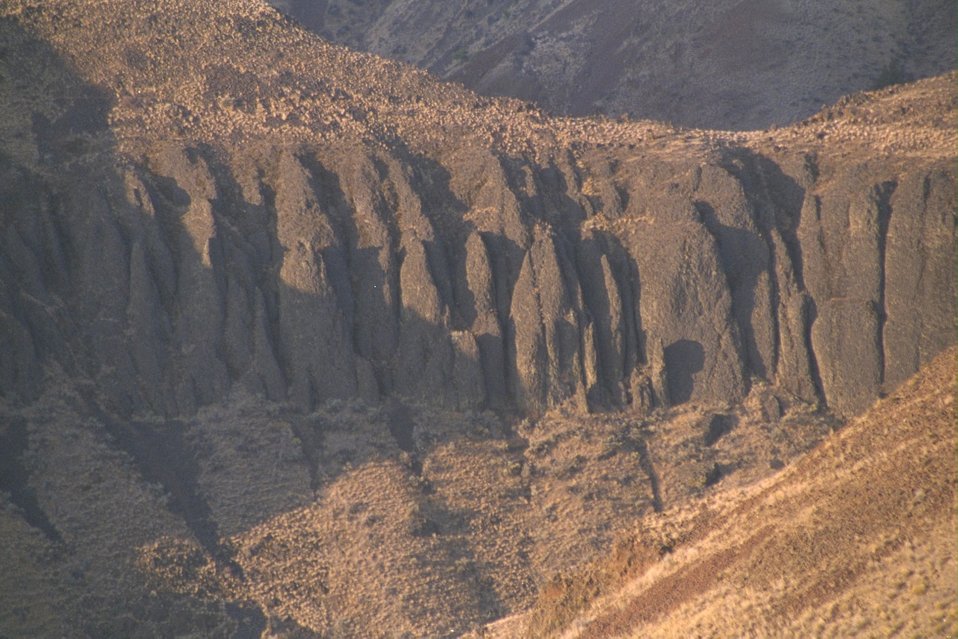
Lava cliffs above the John Day River.